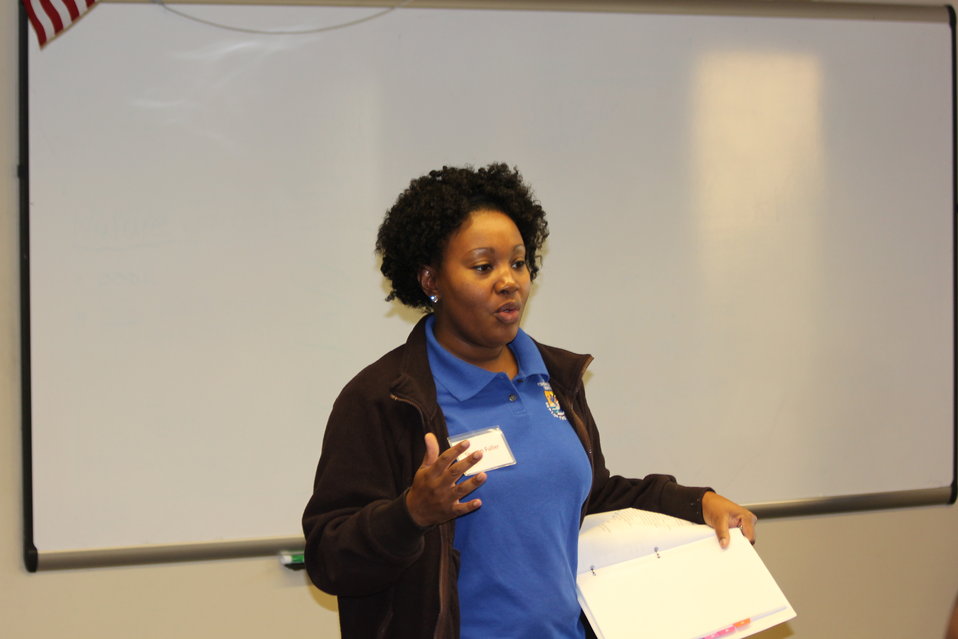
CDIP 2012 Fergus Falls

Sharon, doing what she does best......